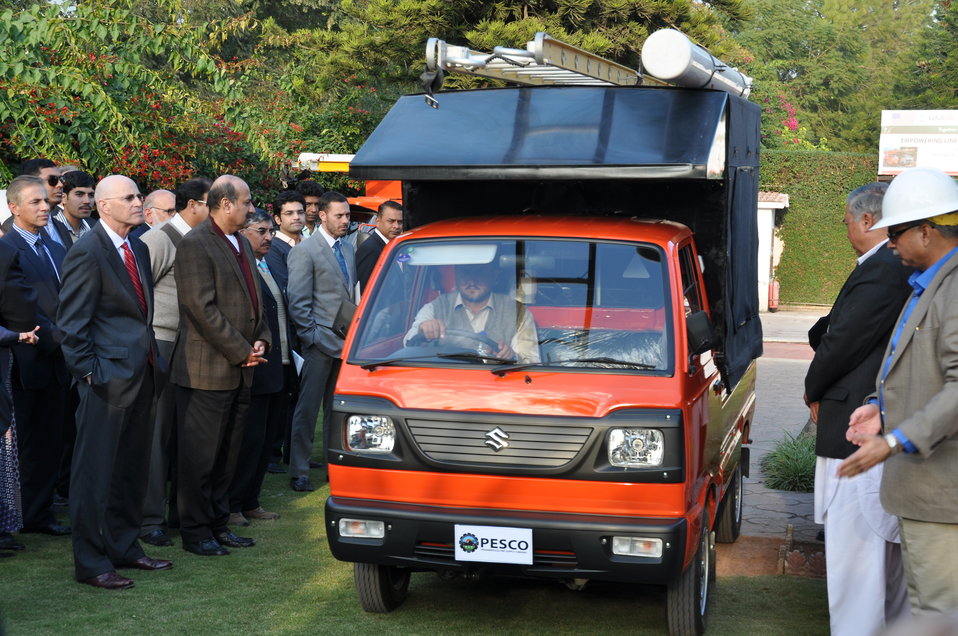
United States Government Strengthens PESCO Field Operations 04